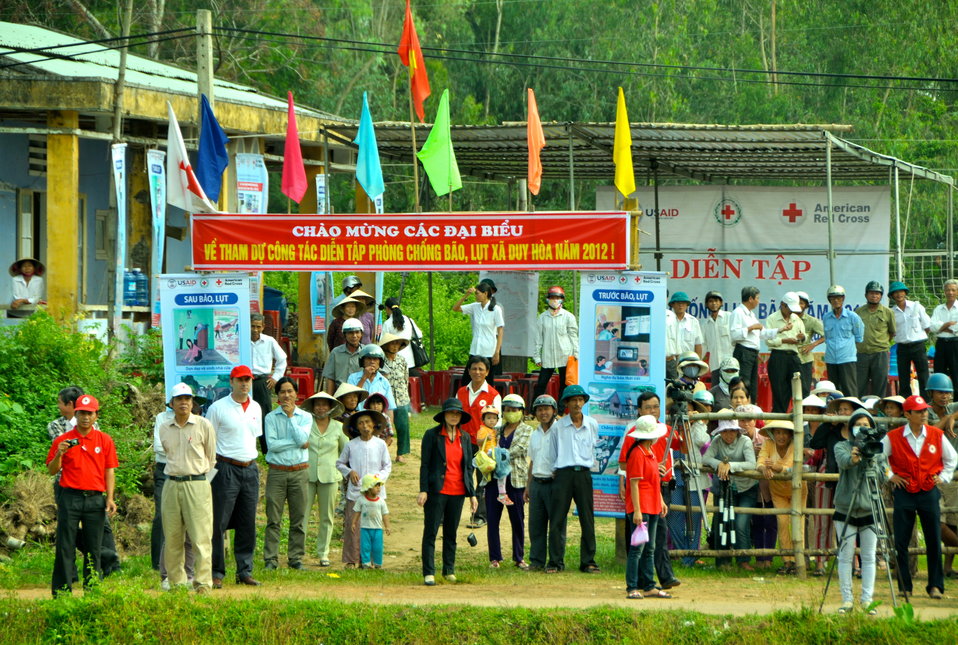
USAID, Red Cross Support Disaster Response Drill in Duy Hoa Commune, Quang Nam Province

Duy Hoa Commune, Quang Nam Province
December 5, 2012